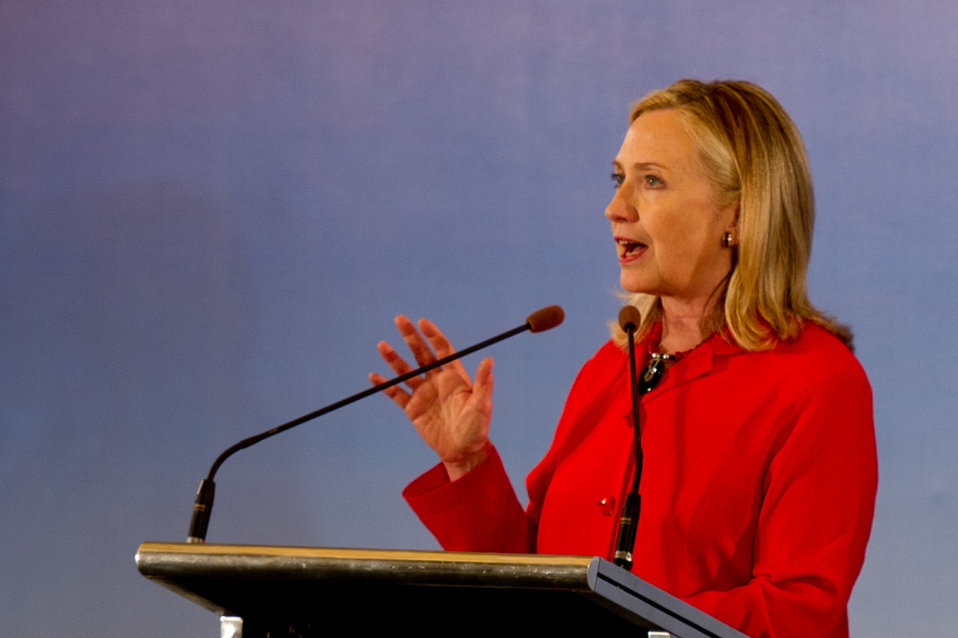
Secretary Clinton Addresses the ASEAN Business Investment Summit

U.S. Secretary of State Hillary Clinton addresses the ASEAN Business Investment Summit in Bali, Indonesia, on November 18, 2011.